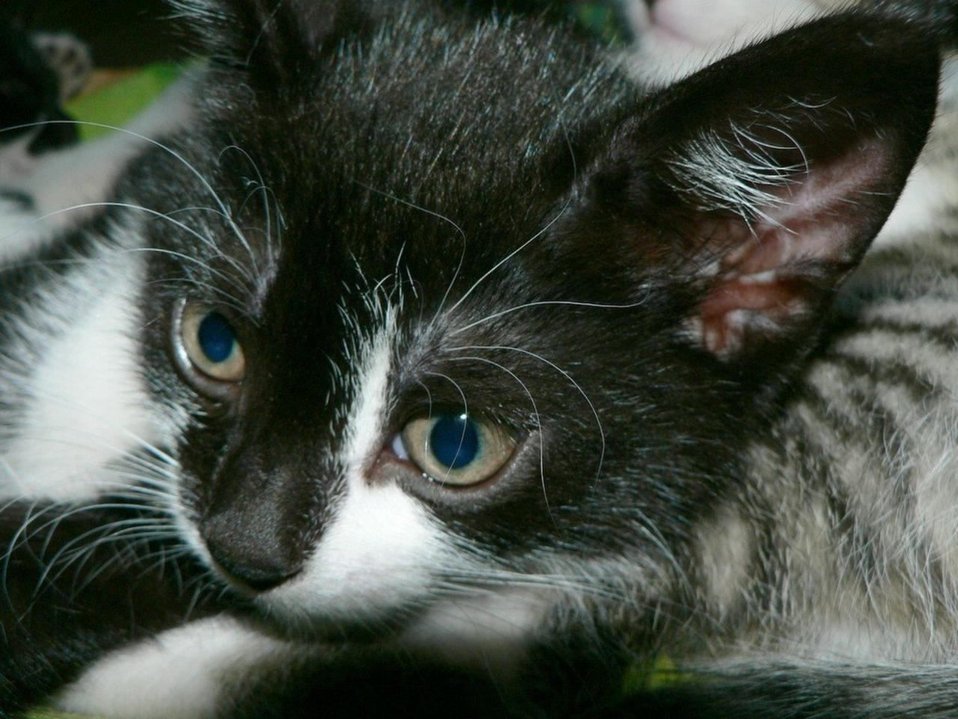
English:
Image title: Cute kitten Image from Public domain images website, http://www.public-domain-image.com/full-image/fauna-animals-public-domain-images-pictures/cats-and-kittens-public-domain-images-pictures/cute-kitten.jpg.html